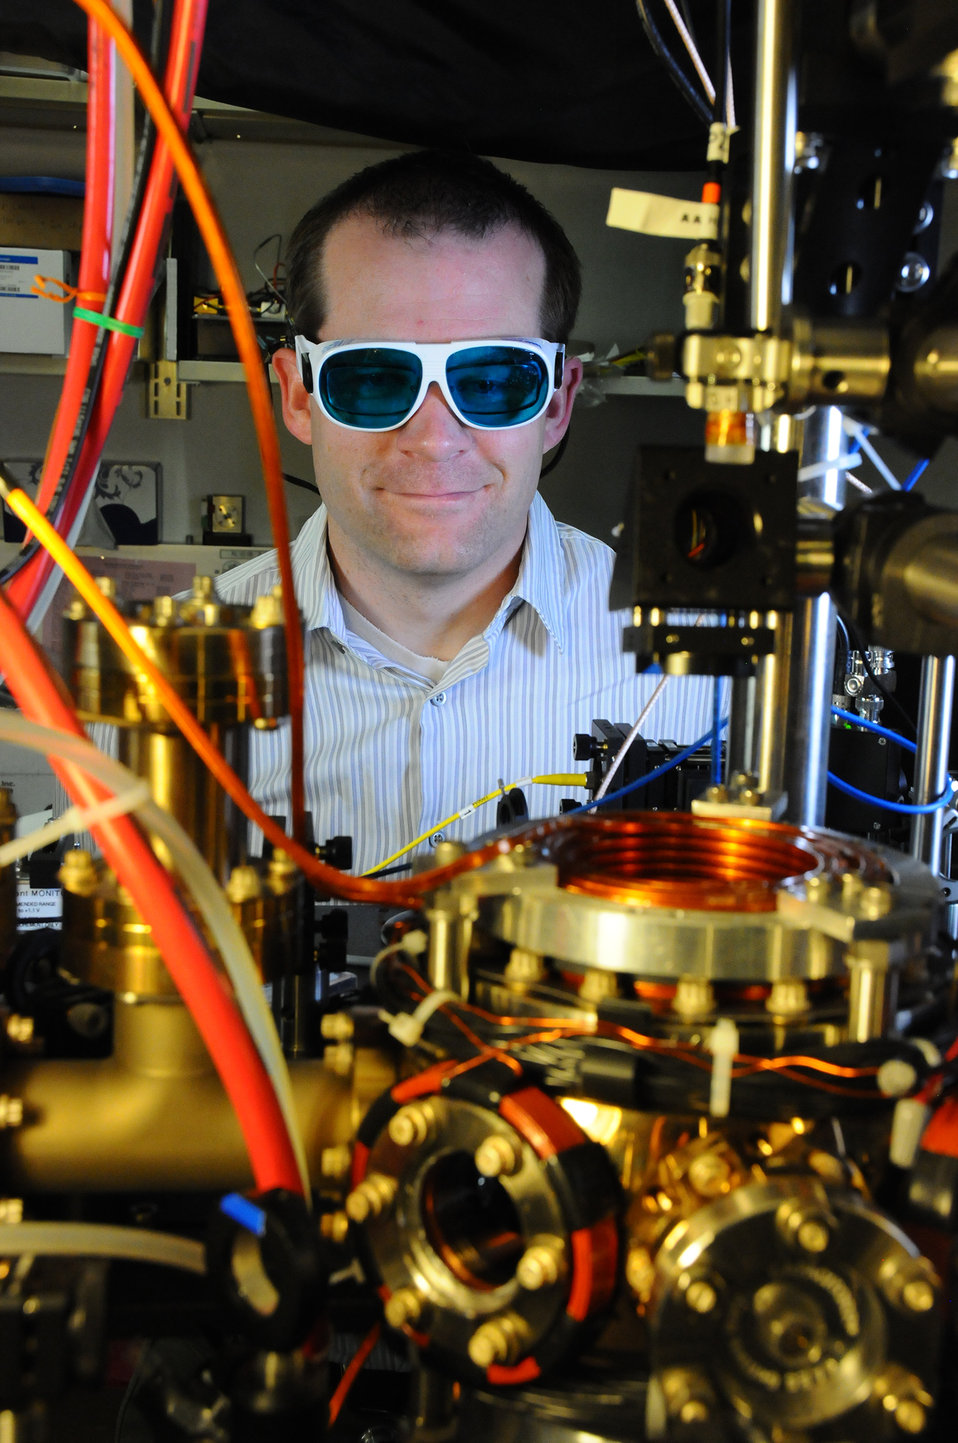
NIST physicist Andrew Ludlow and the ytterbium lattice clock.

See also www.nist.gov/pml/div688/2013 1 17 newera atomicclocks 3.cfm